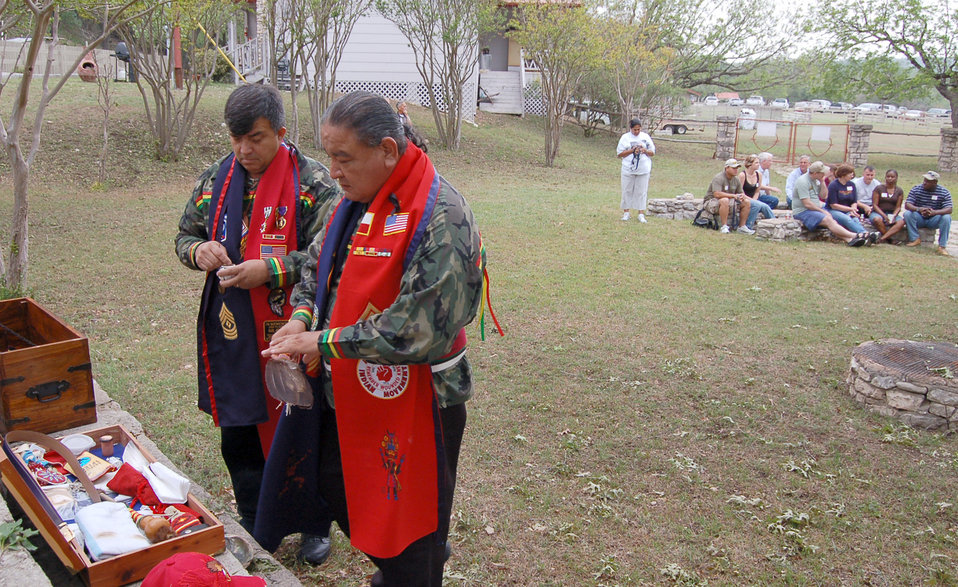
Retreat reconnects couples

Dave Mojica (left) and Jesse Padilla prepare to perform for a sacred Tigua Tribe spiritual ceremony for military couples attending a retreat at the Heart of the Hills Camp in Hunt, Texas, on Saturday, April 22, 2006. Mr. Mojica is a Veterans Affairs counselor who works in Waco, Texas. Mr. Padilla is a Tigua Tribe elder from the Ysleta del Sur Pueblo near El Paso, Texas.